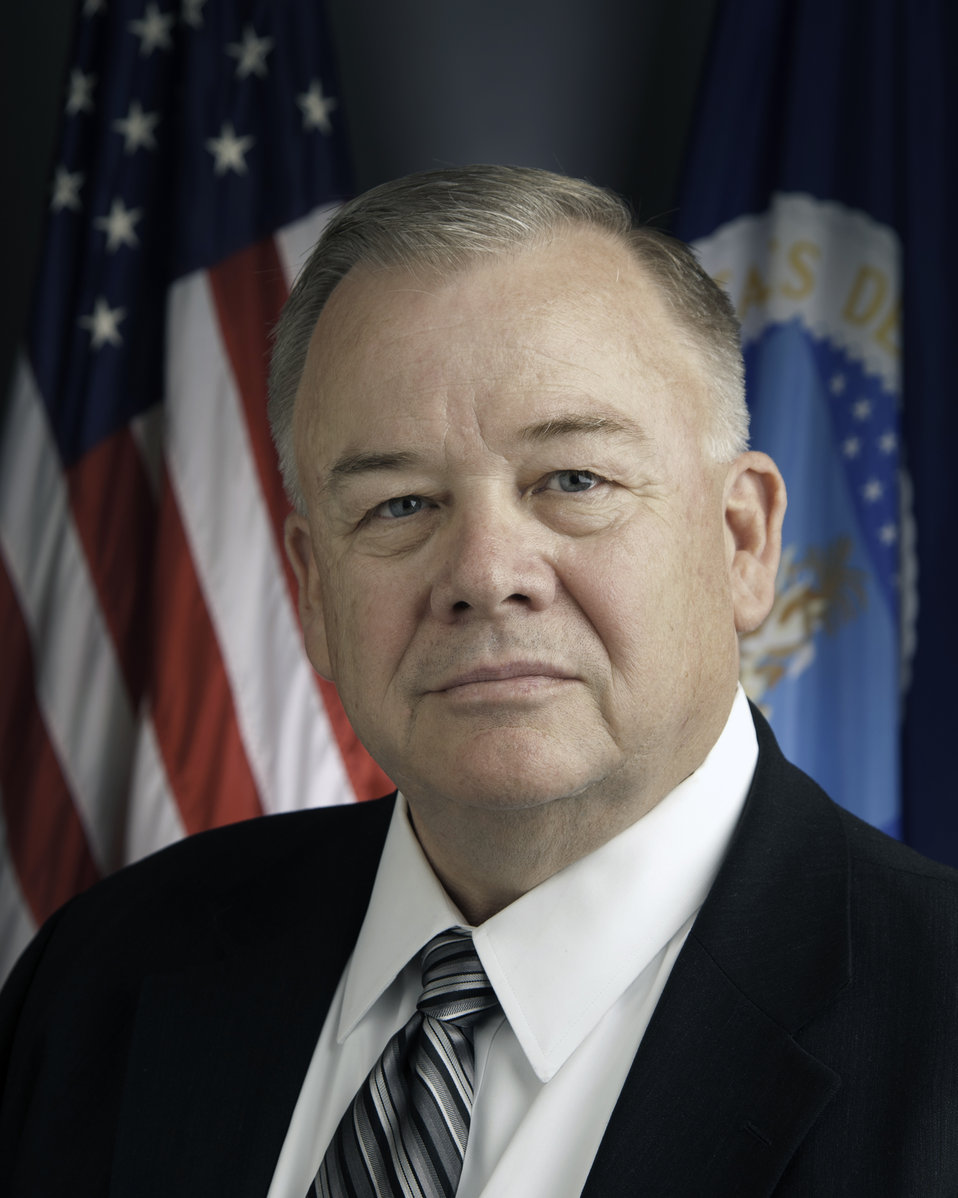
20120607-GIPSA-RBN-6500 Grain Inspection, Packers and Stockyards Administration Administrator Larry Mitchell

Grain Inspection, Packers and Stockyards Administration Administrator Larry Mitchell.